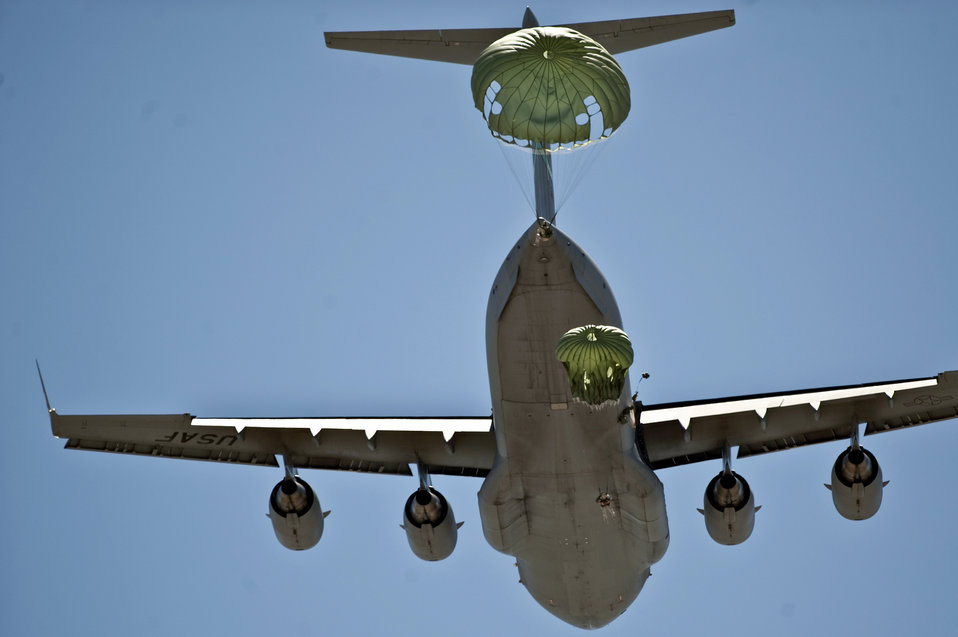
RED HORSE airborne flight

Airmen assigned to the 820th RED HORSE Squadron jump from a C-17 Globemaster III May 12, 2011, during a training exercise above Alamo, Nev.